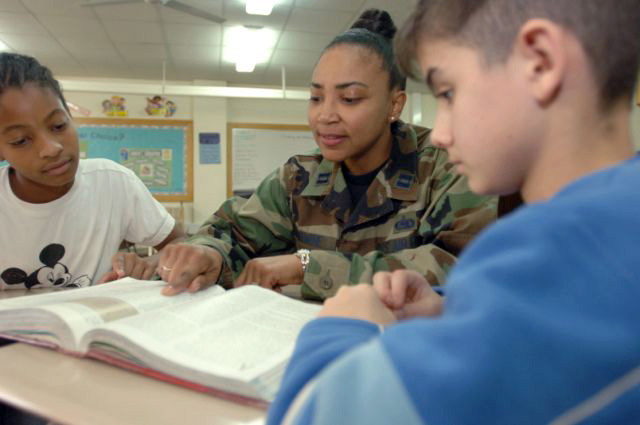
Providing positive influence

INCIRLIK AIR BASE, Turkey (AFPN) -- Capt. Cassandra Antwine tutors two students at the Incirlik American Middle School. The 39th Logistics Readiness Squadron fuels flight commander is involved in the mentoring and tutoring program, which provides an opportunity to have a lasting impact on a child's future.